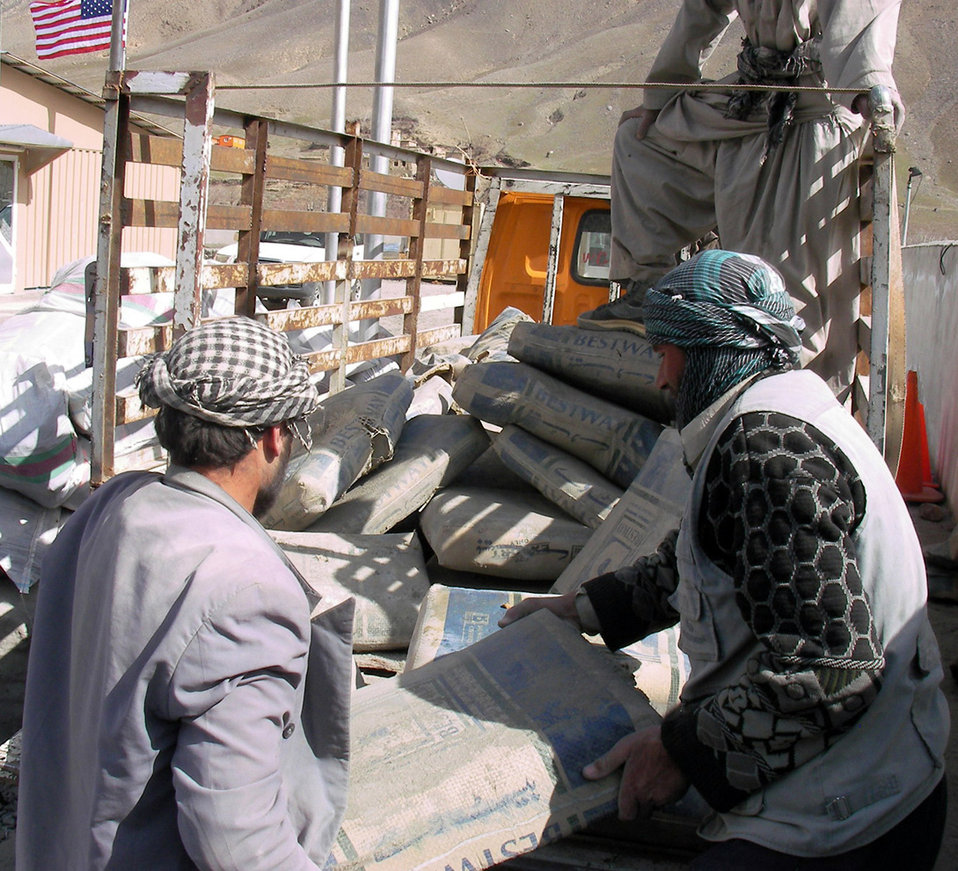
PRT turns best practice into Afghan community favorite

A best practice program developed by the Panjshir Provincial Reconstruction Team has become a community favorite in Panjshir Province, Afghanistan. The program provides construction materials to Afghan locals to complete their own projects. Not all projects are approved and each request meets a stringent review process by the requesting village's provincial council members and the PRT. Villagers pick up bags of cement from the Panjshir PRT headquarters. They complete the project and then engineers inspect the work to ensure the cement was used properly.